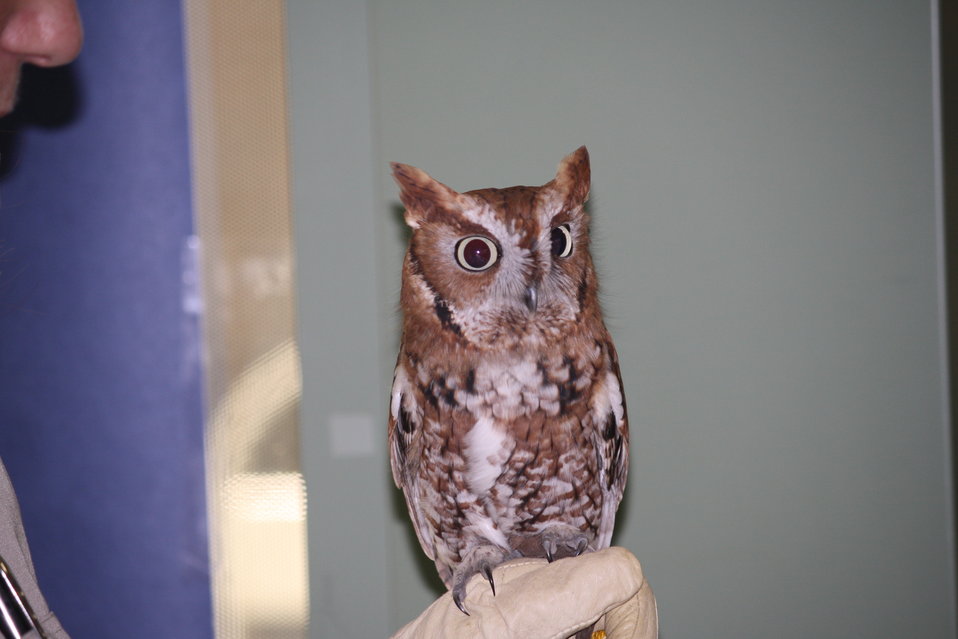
Patuxent Research Refuge 75th Anniversary

Eastern Screech Owl